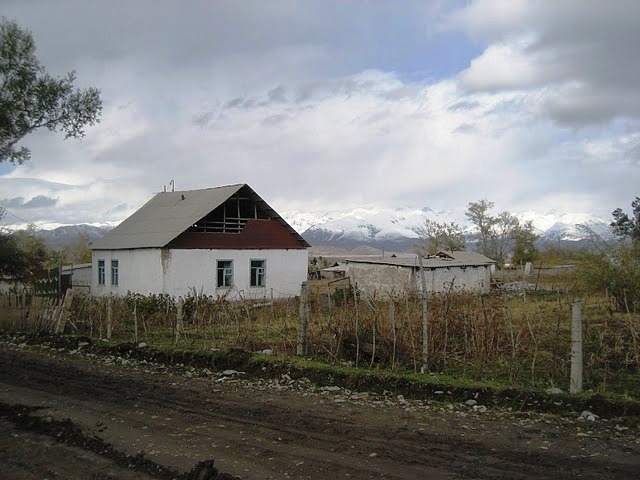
U.S. Embassy Bishkek Officers Travel Kyrgyzstan To Observe Elections

Foreign Service Officers from U.S. Embassy Bishkek travel Kyrgyzstan to observe polling stations and monitor the political and security situation in Kyrgyzstan in October 2010.